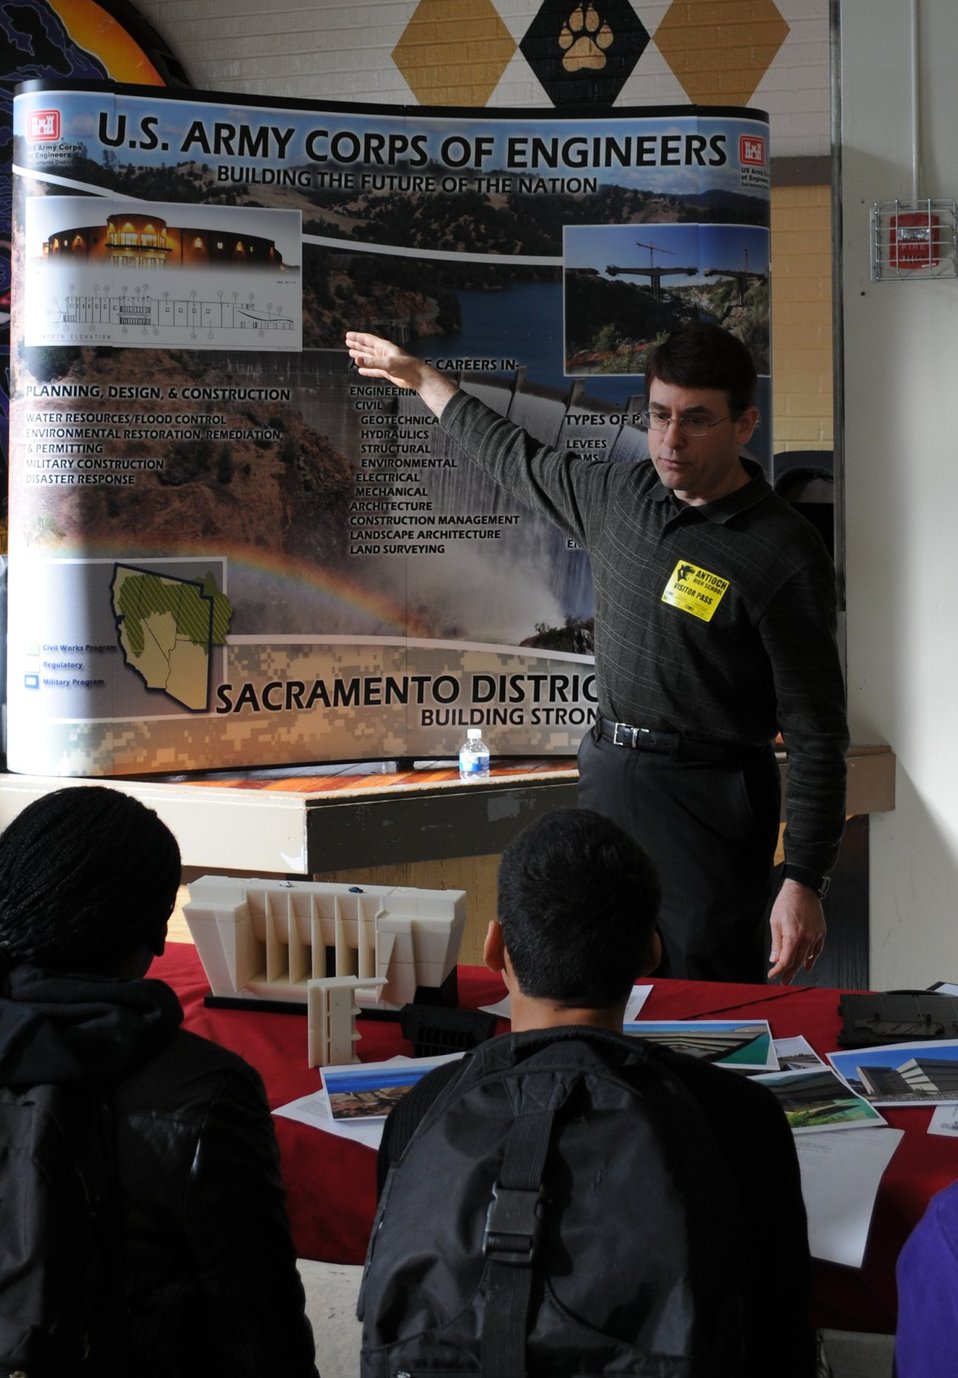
ANTIOCH, Calif. – U.S. Army Corps of Engineers Sacramento District senior electrical engineer John Parrish recalls his experiences working on the Command and Control Facility at Fort Irwin, Calif. for students from the Academy of Engineering and Design for a Greener Environment (EDGE) at Antioch High School here Jan. 31.

Parrish and structural design section chief Roger Zemba were invited to share stories of their educational and vocational backgrounds and explain the Corps’ various missions to more than 120 freshmen enrolled in the school’s new four-year academy, which incorporates a curriculum that links science and math education to engineering careers.

Parrish, an engineer with the Sacramento District since 1987 and one of only two technical lead electrical engineers in the South Pacific Division, told students about his involvement in several Corps projects including the Command and Control facility.